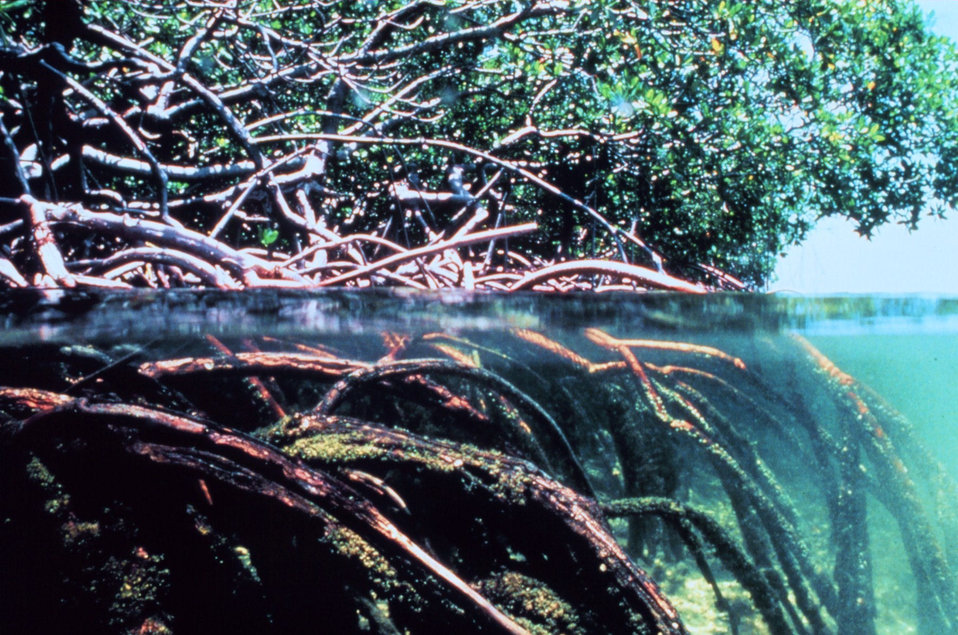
Mangroves showing root system below the water surface